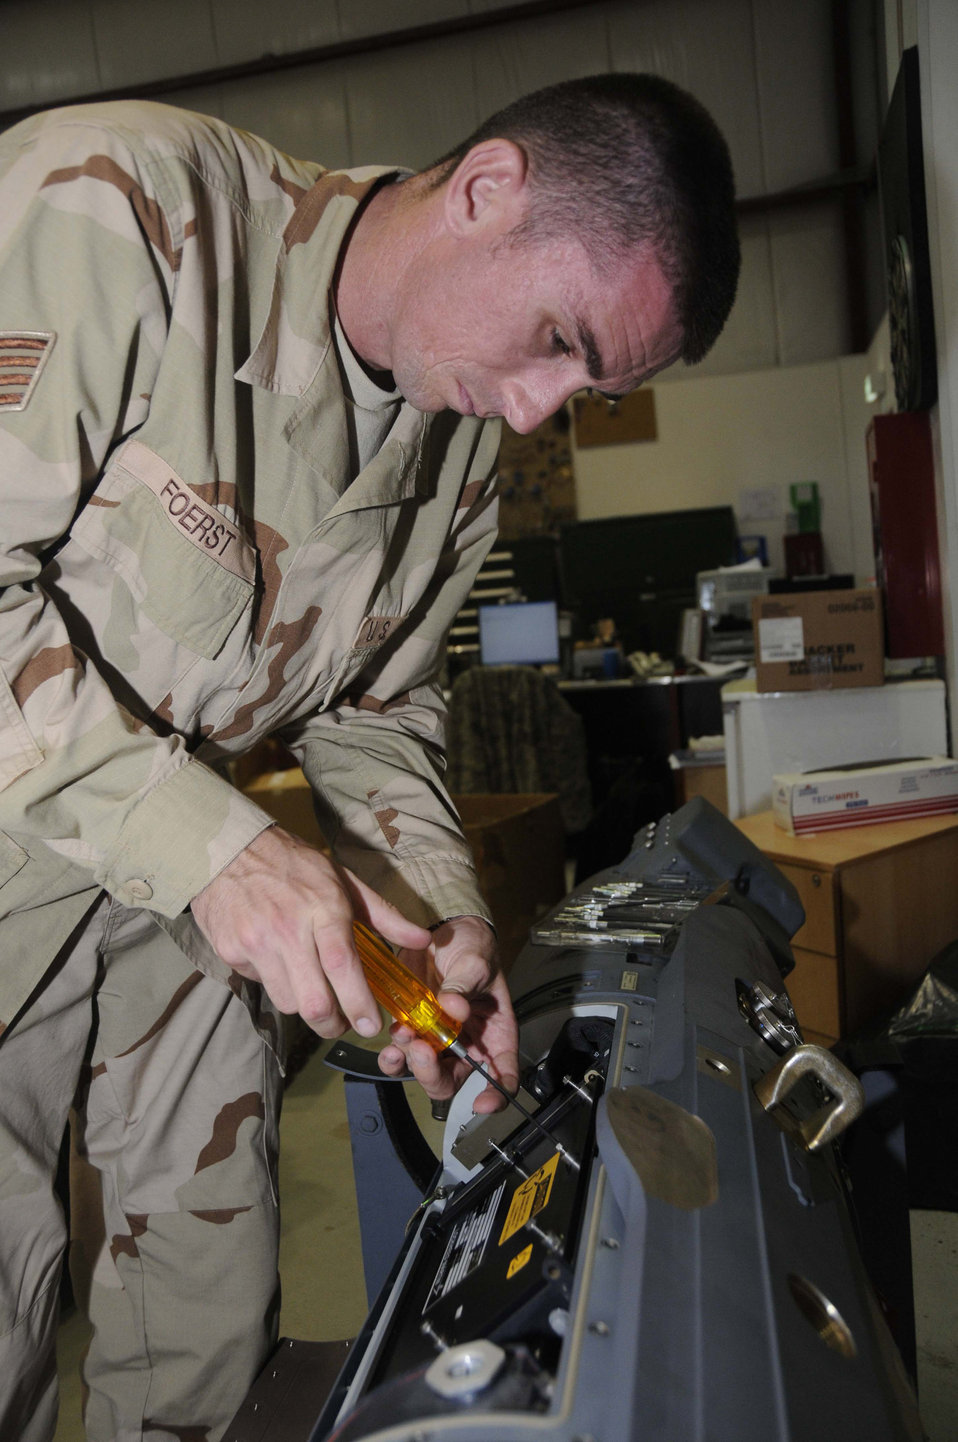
Sniper ATP-equipped B-1B has combat first

Staff Sgt. Jonathan Foerst checks the serviceability of the circuit card of a sniper pod Aug. 5 in an undisclosed location in Southwest Asia. Sergeant Foerst is a communication navigation mission system craftsman assigned to the 379th Expeditionary Aircraft Maintenance Squadron.